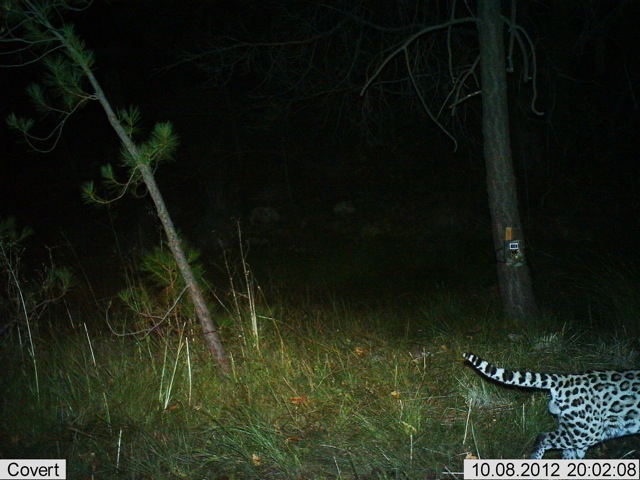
Male ocelot photographed by automatic wildlife cameras in the Huachuca Mountains on Oct 8, 2012 as part of a US Fish and Wildlife Service/Department of Homeland Security-funded jaguar survey conducted by University of Arizona. This ocelot was first photographed in February 2011.